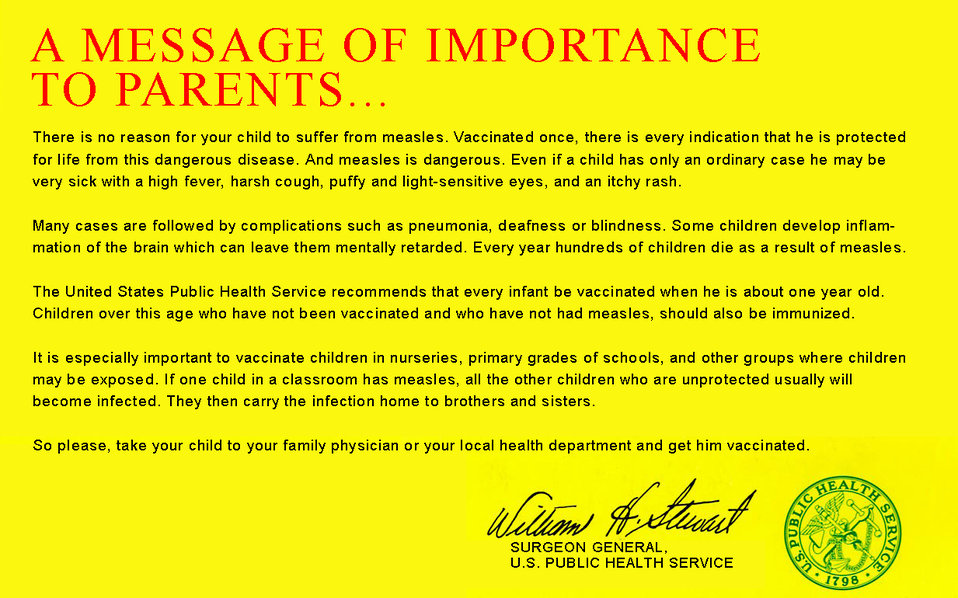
This mid to late 1960s U.S. Public Health Service announcement from the Office of the Surgeon General, William H. Stewart, M.D., helped to educate the public as to the health complications associated with a measles infection, and the importance of receiving a preventative vaccination.